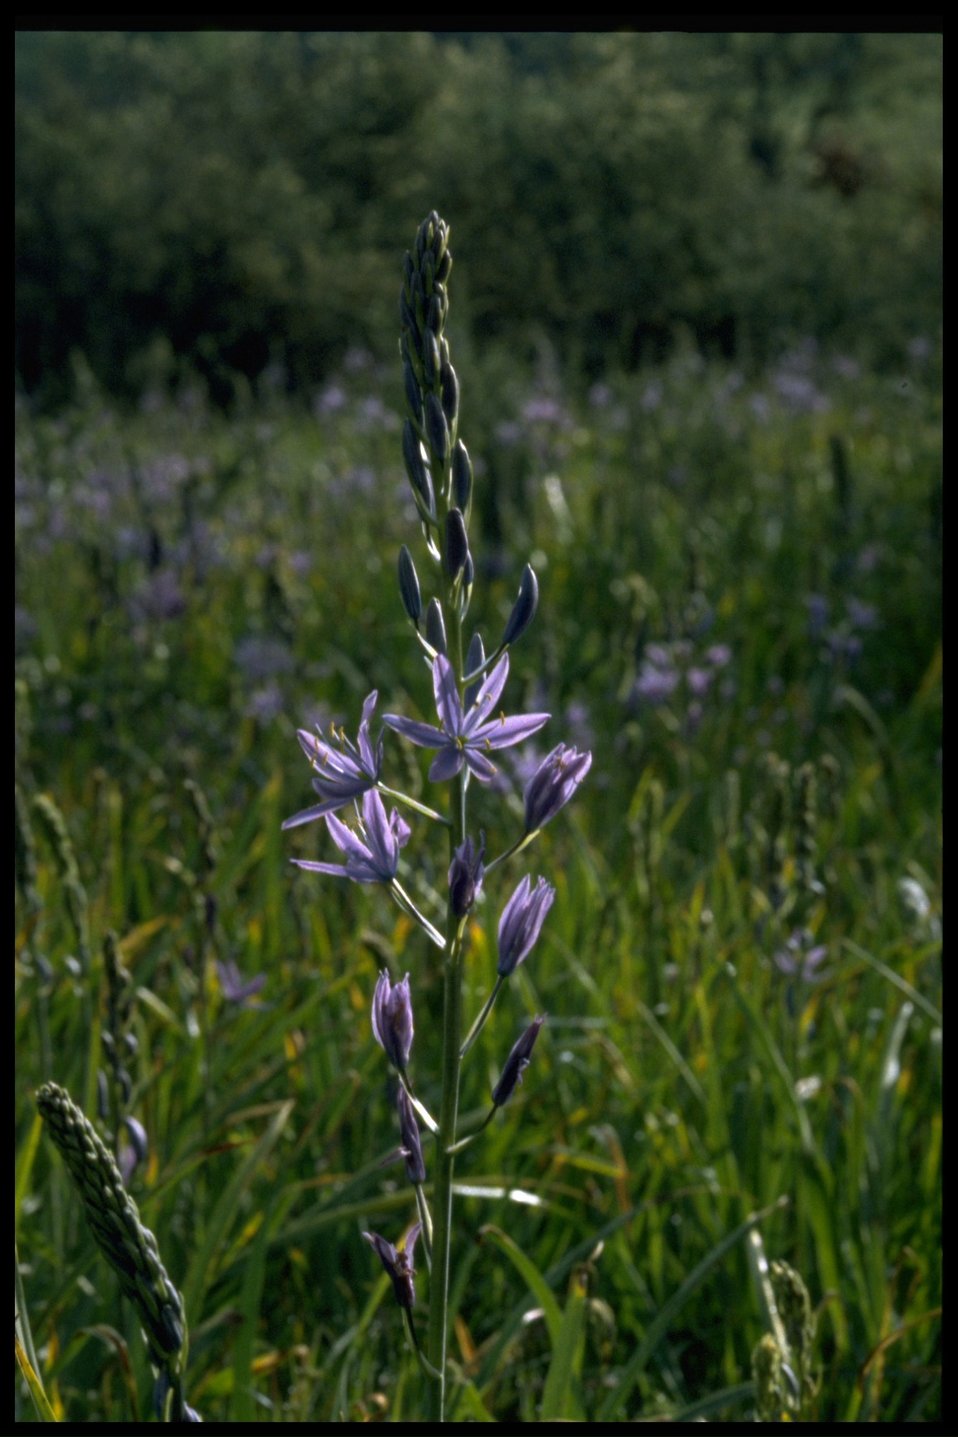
Medium shot of Camassia quamash.